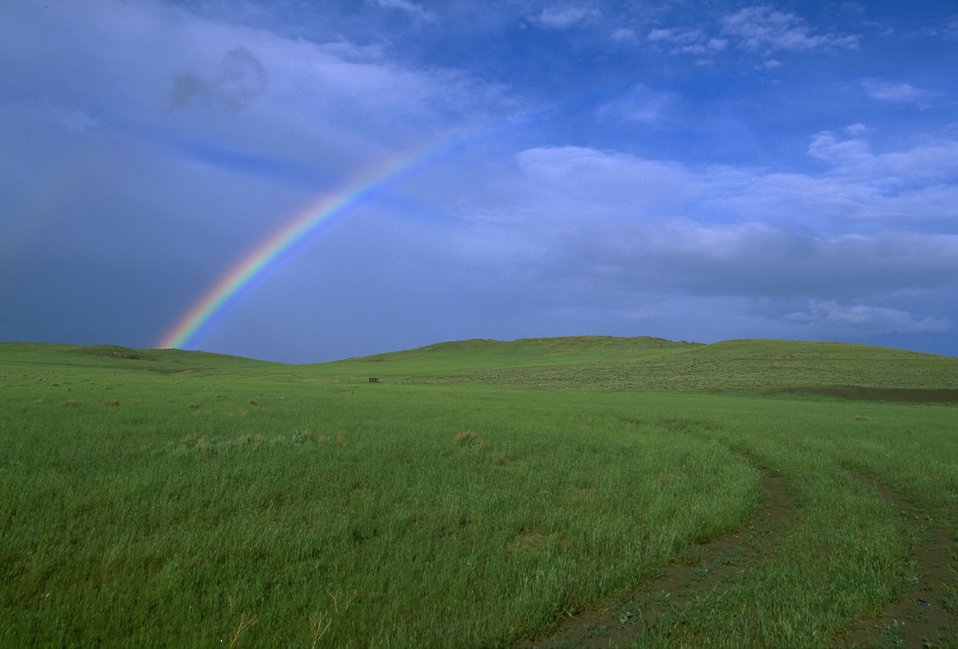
Two-track road leading to the end of the rainbow